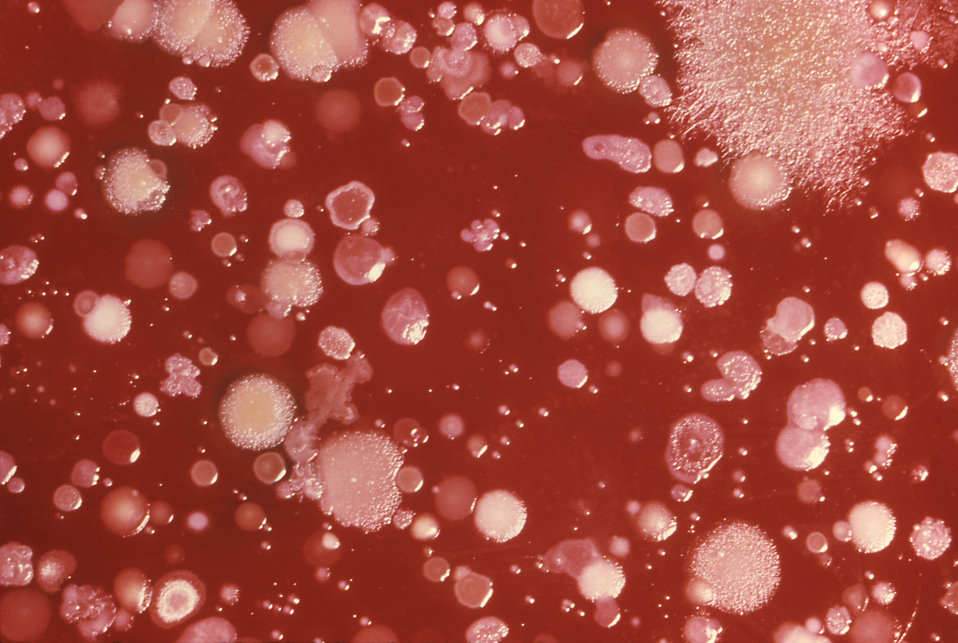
This was a blood agar culture plate growing B. anthracis and other soil flora.